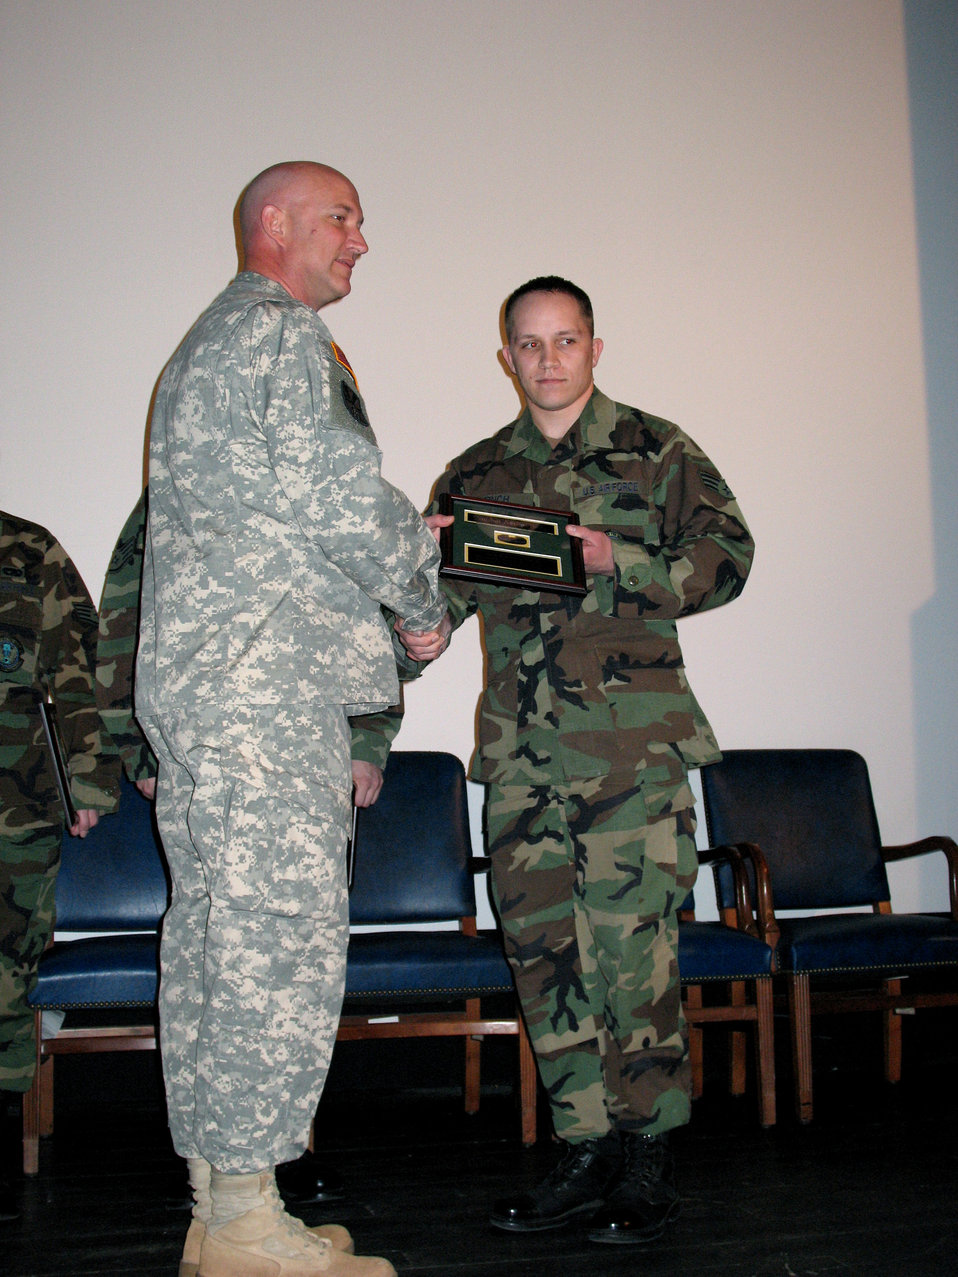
Five Ramstein Airmen earn Army Combat Action Badge

Army Colonel Michael MacNeil presents the Army Combat Action Badge to Senior Airman Benjamin Finch at Ramstein Air Base, Germany March 16. Airman Finch received the badge for his deployment to Iraq in support of the Army. He and four other Airmen were actively engaged in combat and Airman Finch's convoy was struck by an improvised explosive device. Colonel MacNeil was the commander of the 37th Transportation Command at the time. Airman Finch is a vehicle operations dispatcher assigned to the 435th Vehicle Readiness Squadron.